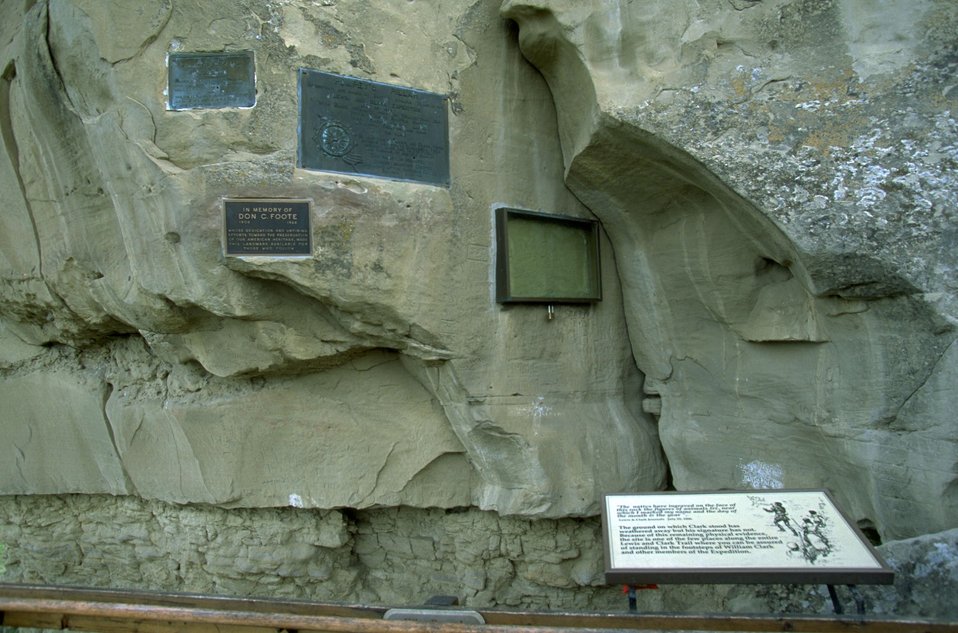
Signature of William Clark at center of picture, framed in black, on Pompeys Pillar